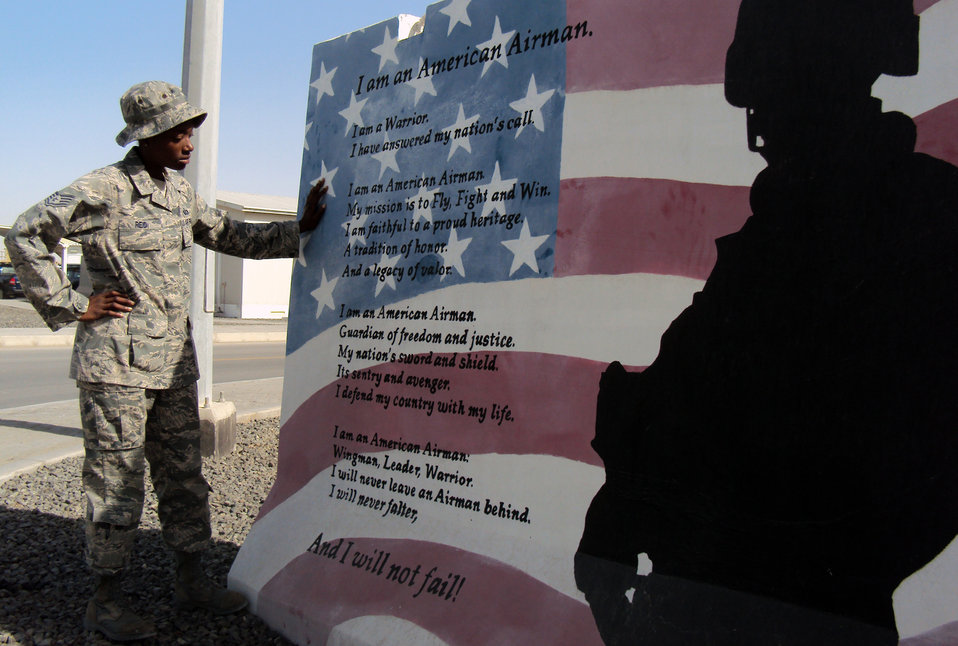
Lakenheath staff sergeant says life's events made her a better Airman

Staff Sgt. Sparkle Reid, a services journeyman, is deployed as the non-appropriated funds custodian for the 380th Expeditionary Force Support Squadron at an air base in Southwest Asia. Here, she is pictured looking at a painted mural of the Airman's Creed by the 380th Air Expeditionary Wing headquarters on Feb. 25, 2010. Sergeant Reid is deployed from from the 48th Force Support Squadron at Royal Air Force Lakenheath, England, and her hometown is Queens, N.Y.